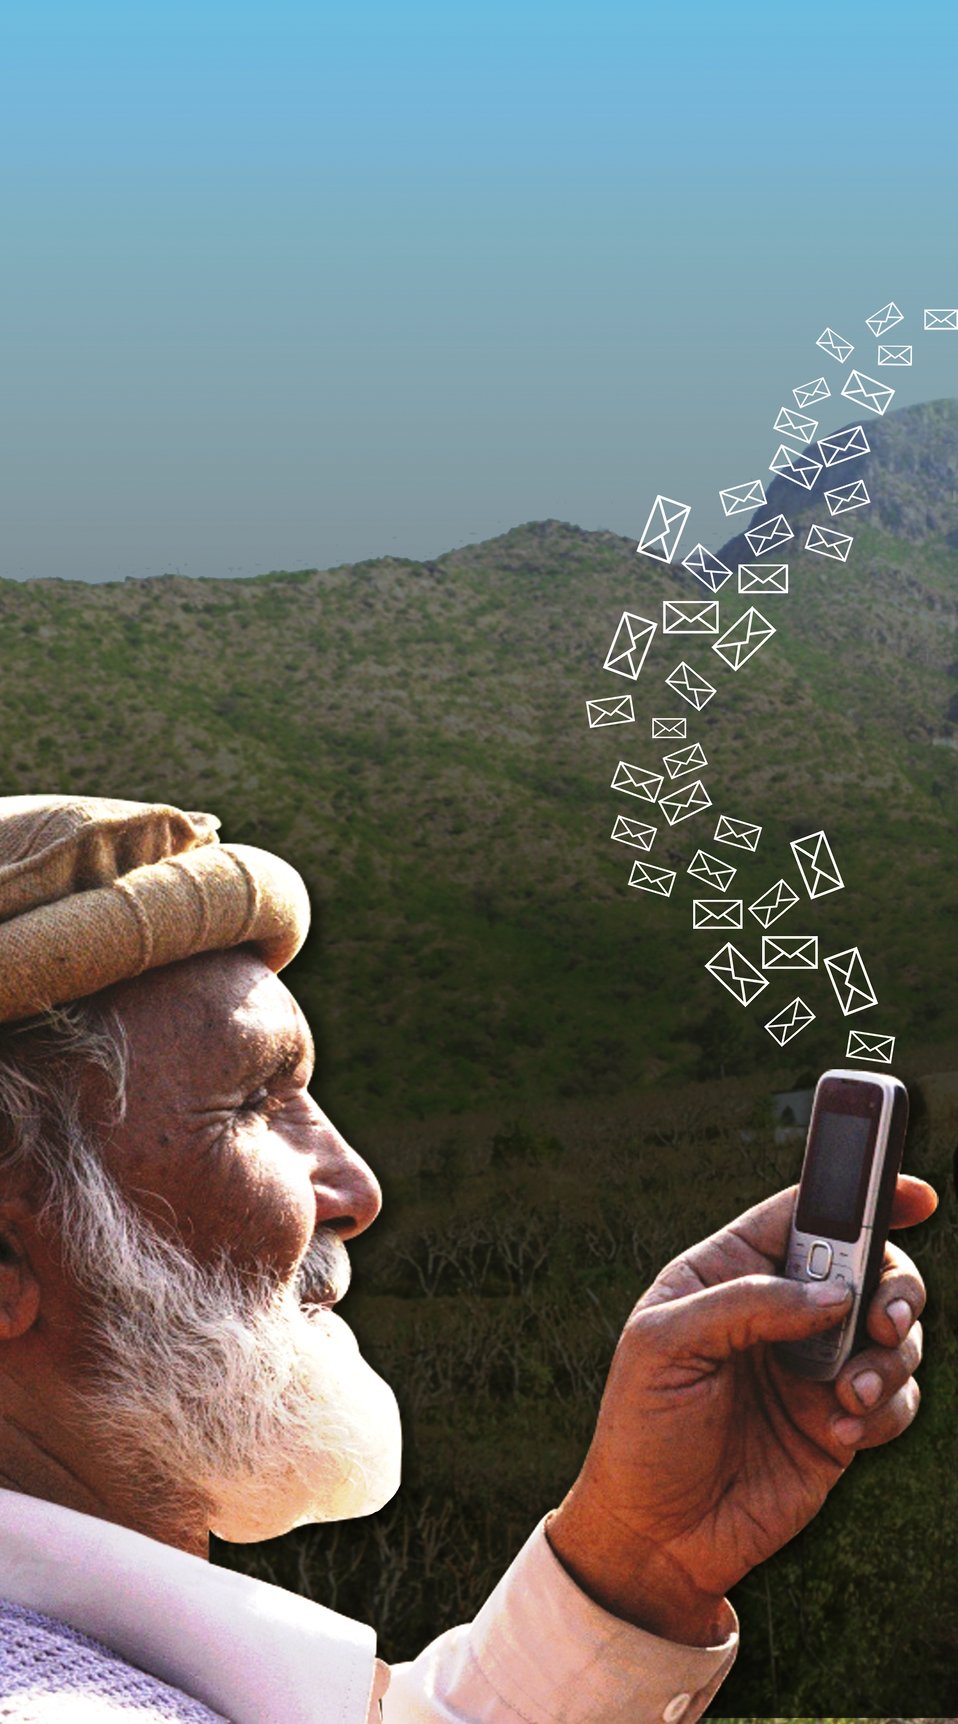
A subscribed farmer receiving text alert regarding best farming practices

Peach and Potato farmers in Swat are receiving text alerts on their mobile phones which is helping them improve their farming practices.